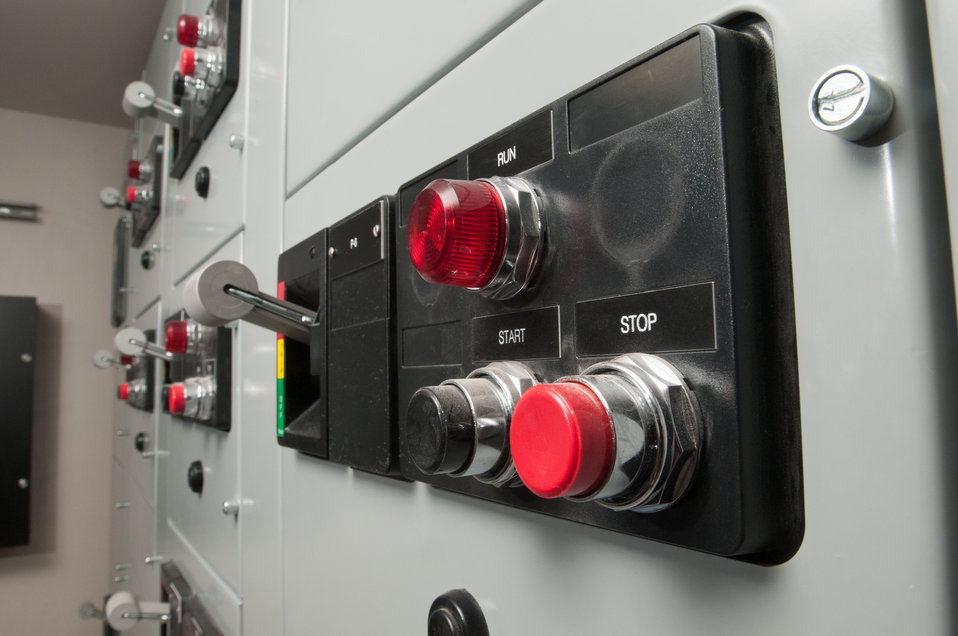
Freer Water Control and Improvement District (FWCID) benefits from the financial assistance of the U.S. Department of Agriculture (USDA) Rural Development (RD) to complete a two-phase approach to meeting the city’s water supply and safety needs, on Tuesday, June 18, 2013.

Although, the naturally occurring arsenic levels have remained constant for more than a century, the Environmental Protection Agency (EPA) safe level standards have established lower levels of arsenic to be safe for human consumption. To meet those levels FWCID approached USDA and was awarded a $986,000 loan for Phase I, to install two new water wells, each rated at 167 gallons per minute (creating a total of eight wells); 13,600 feet of well collection lines; and 15,000 linear feet of well control line to remotely control the well pumps and the 1,000,000 gallon holding tank at the well facility, which supplies water to the new Arsenic Removal System (Phase II). Previously, water was manually controlled by personnel who knew when and how long to manually opened and closed water valves or started well pumps to ensure holding tank levels were within operating levels during peek and slack times of the day. Phase II was a combination of a $1,832,000 loan and a $1,258,750 grant, which provided for the customized arsenic removal system, seen in these photos. The system includes a new 3,530 sp. ft. facility, on a .76-acre site, and houses the operations room, computer and power system, laboratory room, and pump systems. The entire operation can be monitored through a desktop computer interface system. The computer-controlled system ensures raw water is fed to the arsenic removal pump system, which works in sequence to maintain a constant pressure, when needed, to pump water through (blue) arsenic removal absorber vessels, and into ground storage tanks that feeds the residential and commercial needs of the city. Samples of water are periodically tested; and so far the arsenic levels have been below 1 part per billion (PPB), well under the 10 PPB limit.